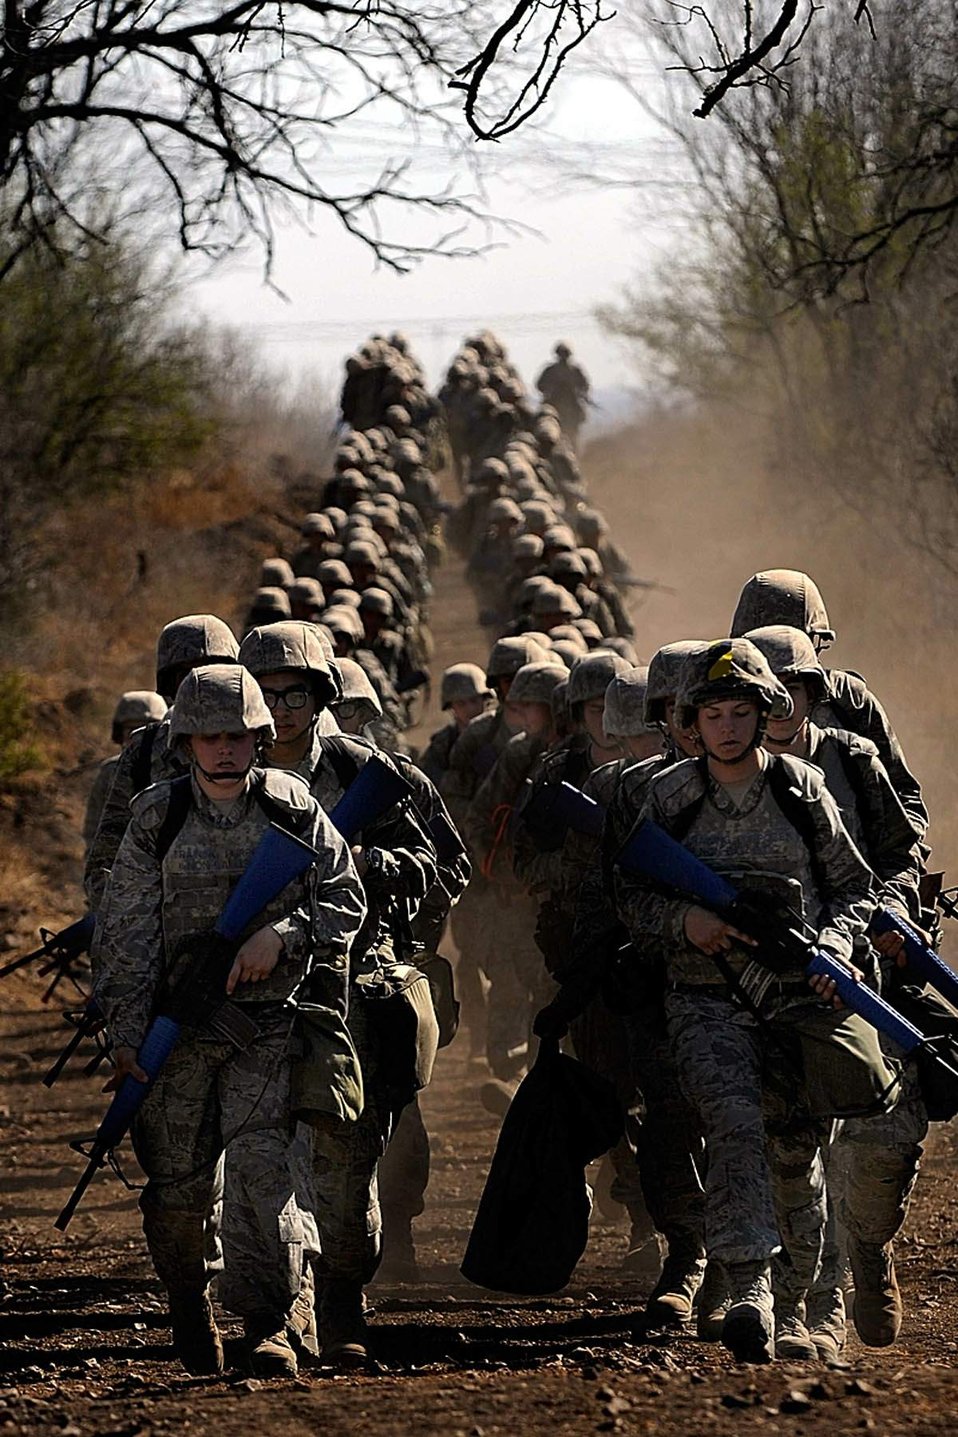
Basic Training

Equipped with combat gear, Air Force basic trainees march in two columns from a mock air base where they practiced a defensive scenario during basic military training at Lackland Air Force Base, Texas.